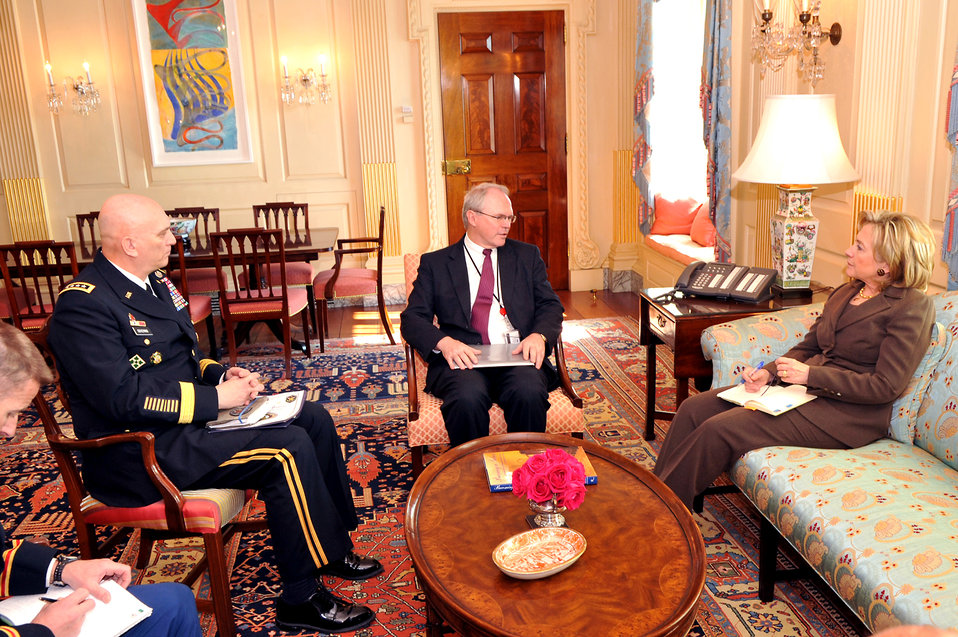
Secretary Clinton Meets With U.S. Ambassador to Iraq and Commanding General, Multi-National Force-Iraq

U.S. Secretary of State Hillary Rodham Clinton meets with U.S. Ambassador to Iraq Chris Hill and General Ray Odierno, Commanding General, Multi-National Force-Iraq, at the Department of State in Washington, DC February 19, 2010.